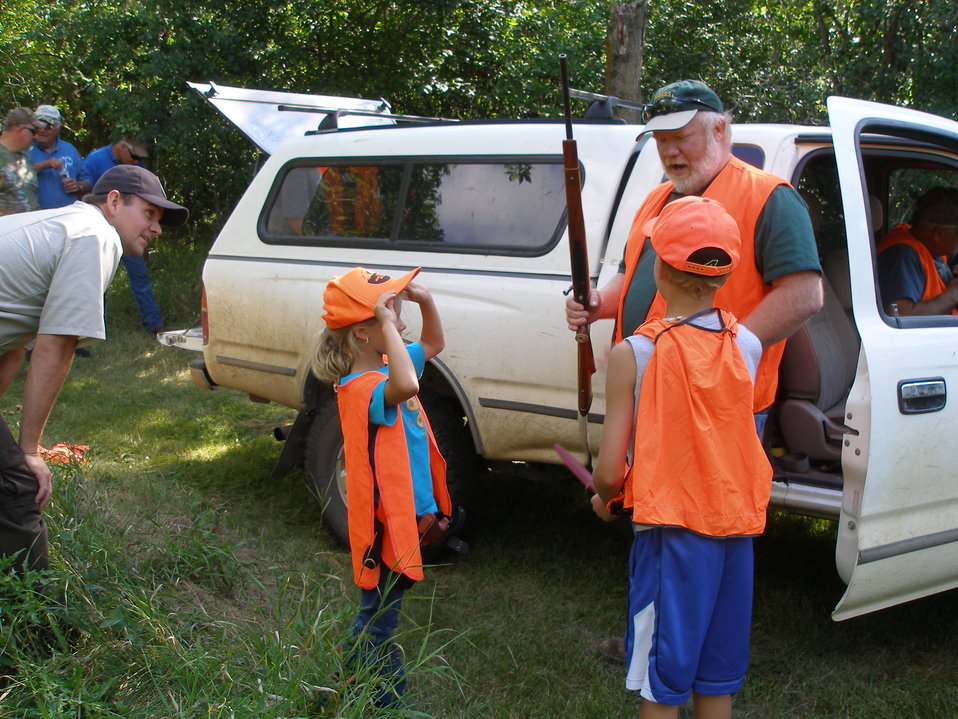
2011 Greenwing Day - Game Warden scenario session

Des Lacs National Wildlife Refuge, Tasker's Coulee

This session teaches youth how to be responsible sportmen and women.